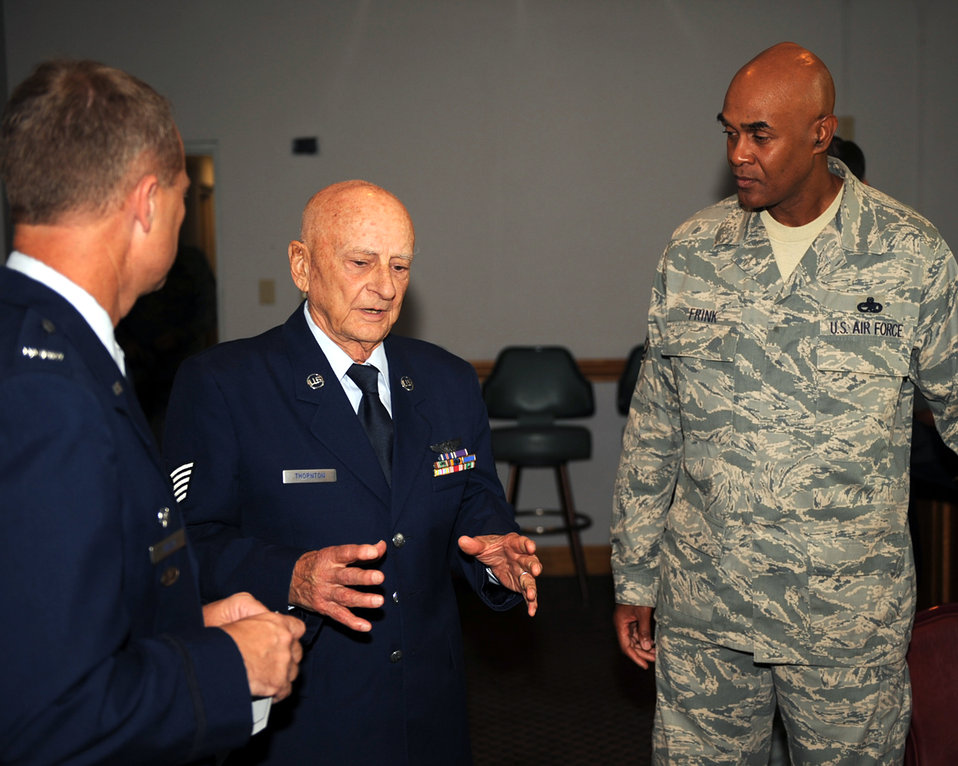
WWII vet receives long-awaited medals

World War II veteran Tech. Sgt. Holt Thornton speaks with Col. Mark Kelly and Chief Master Sgt. Leroy Frink after a medal presentation ceremony Aug. 29, 2009 at Seymour Johnson Air Force Base, N.C. Colonel Kelly presented Mr. Thornton with five medals for his service during World War II, including The Purple Heart and Air Medal. Mr. Thornton was a B-24 Liberator aerial gunner while part of the Army Air Corps, and spent his last three months in the service here. Colonel Kelly is the 4th Fighter Wing commander. Chief Frink is the 4th FW command chief.